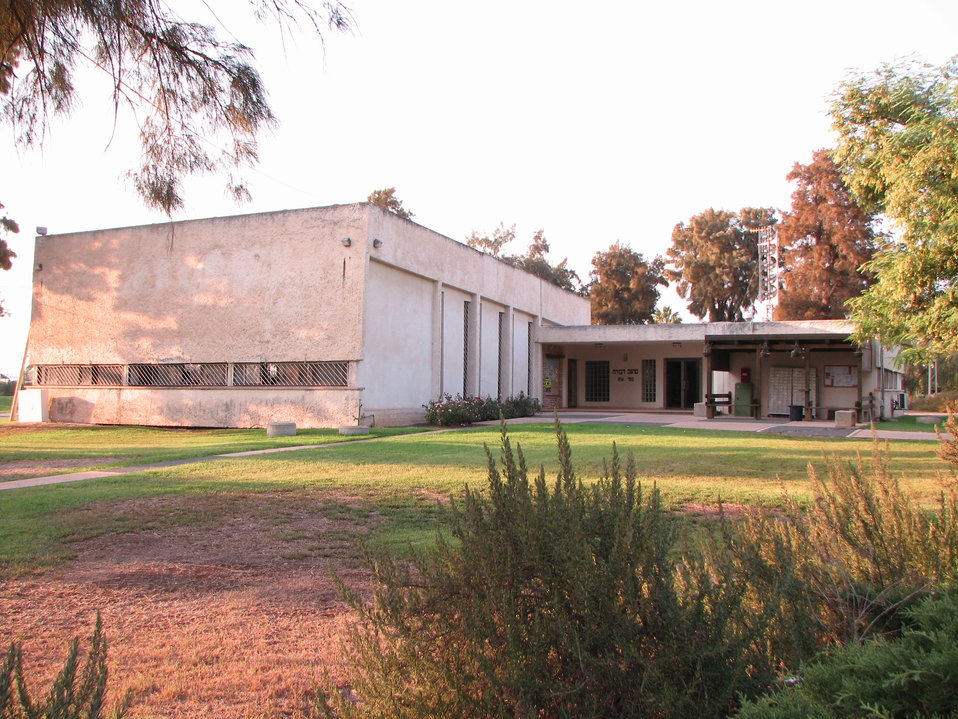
עברית: בית העם במושב דבורה